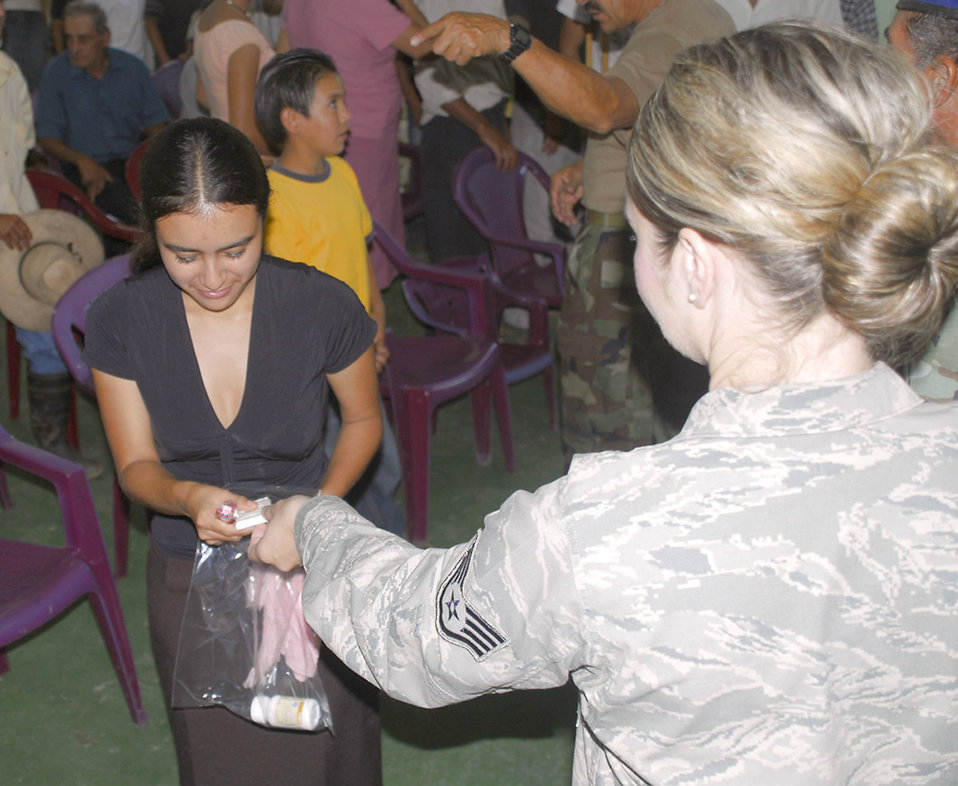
MEDRETE provides free medical care

Staff Sgt. Jennifer Kiemel hands out soap to people who attended a medical readiness training exercise in San Antonio De Canada, Honduras, July 25. Among the services provided at the MEDRETE were preventive medicine, health screening, a provider visit and cancer screening. Sergeant Kiemel is deployed with the Joint Task Force-Bravo Medical Element.